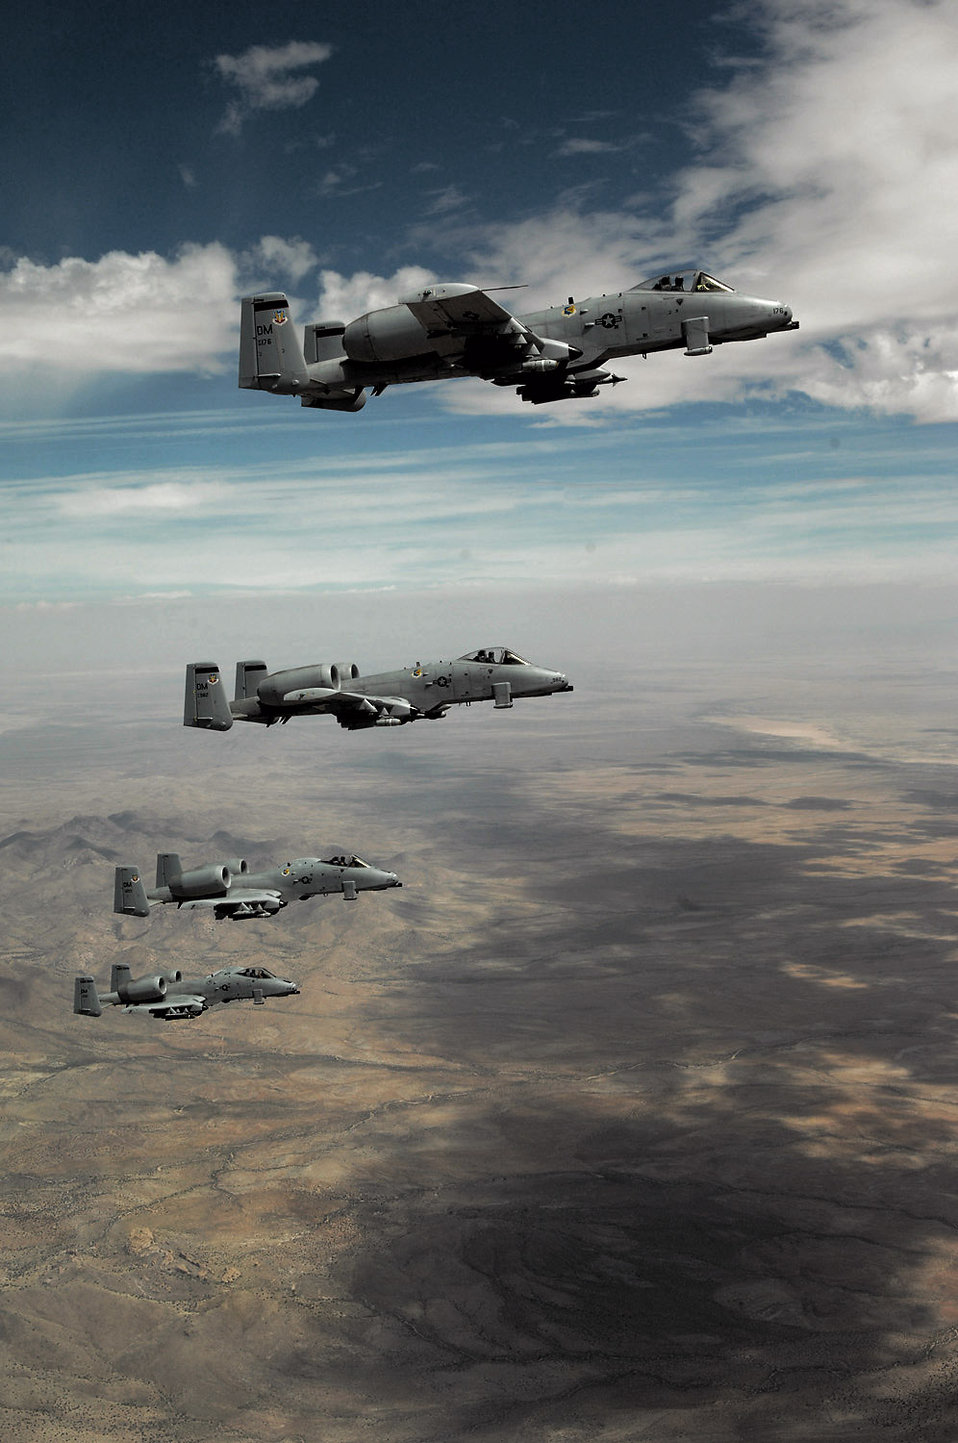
Soaring over Arizona

Four A-10 Thunderbolt IIs from the 355th Fighter Wing at Davis-Monthan Air Force Base, Ariz., fly in formation over Arizona April 29. The A-10s received in-flight refueling from a KC-135 Stratotanker from the Arizona Air National Guard's 161st Air Refueling Wing based in Phoenix.